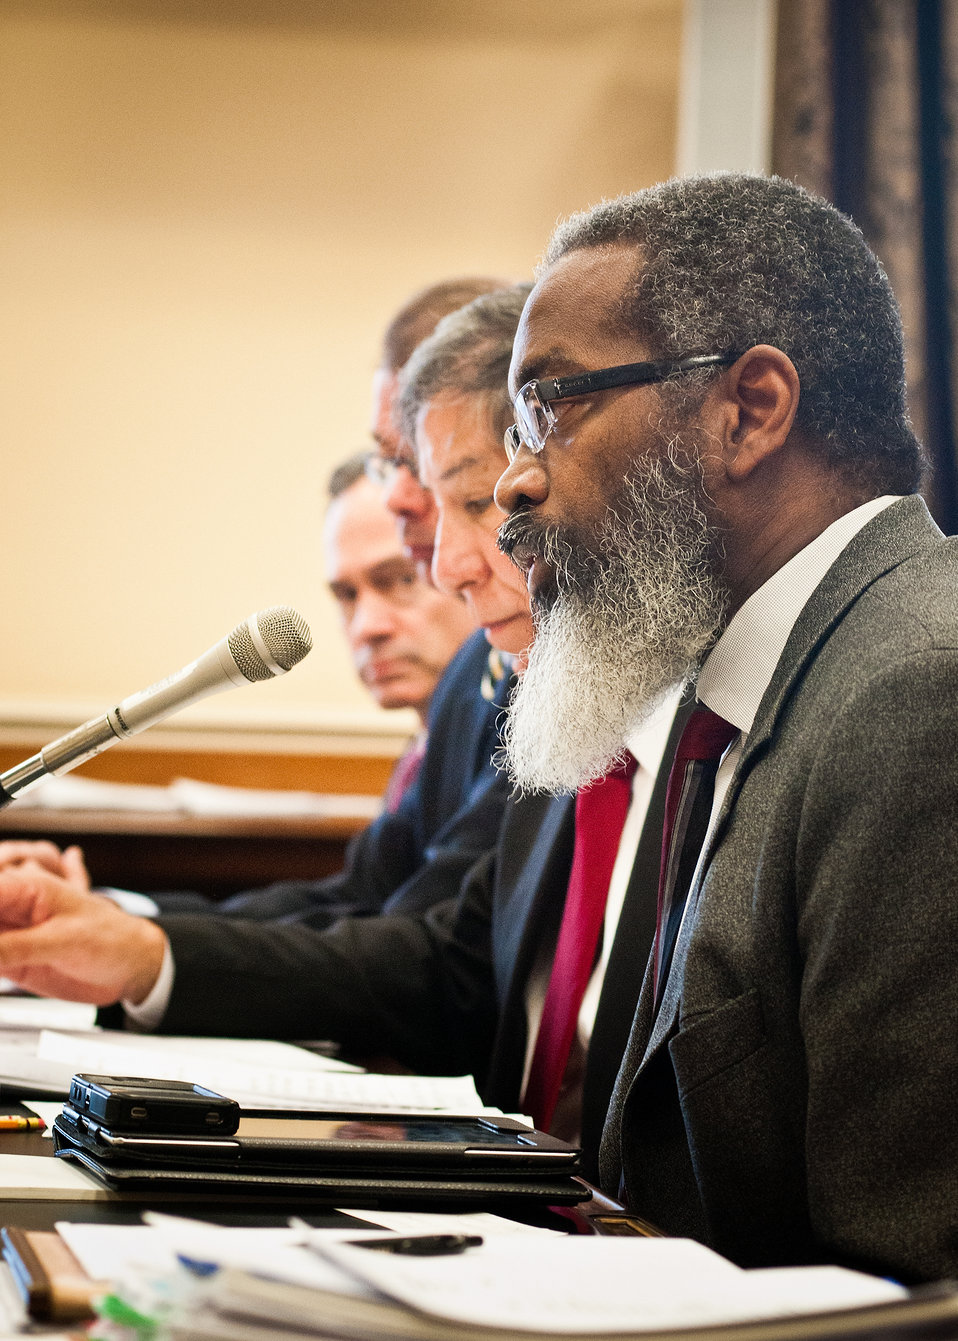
Dr. Gregory Parham, Administrator, Animal and Plant Health Inspection Service answers a questions while testifying on Capitol Hill with Ed Avalos, Undersecretary Marketing and Regulatory Programs and representatives of the Marketing and Regulatory Program agencies before the House Agriculture Appropriations Subcommittee on the agencies fiscal year 2013 budget requests in Washington, D.C., Tuesday, March 6, 2012.